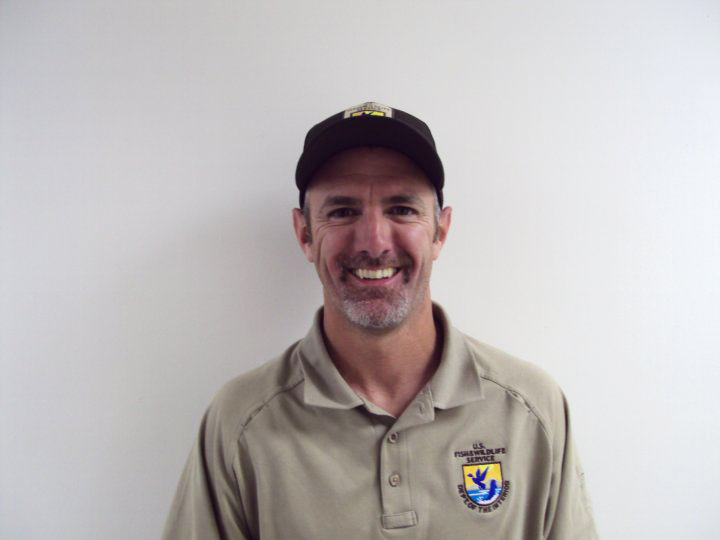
Michael Hottes, Engineering Equipment Operator at Duck River unit, served in the U.S. Air Force on Active Duty from 1996 to 2001 and in the reserves from 2001 to present. His tours of duty included Germany in 2003 and the United Arab Emirates in 2002 in support of Operation Enduring Freedom.